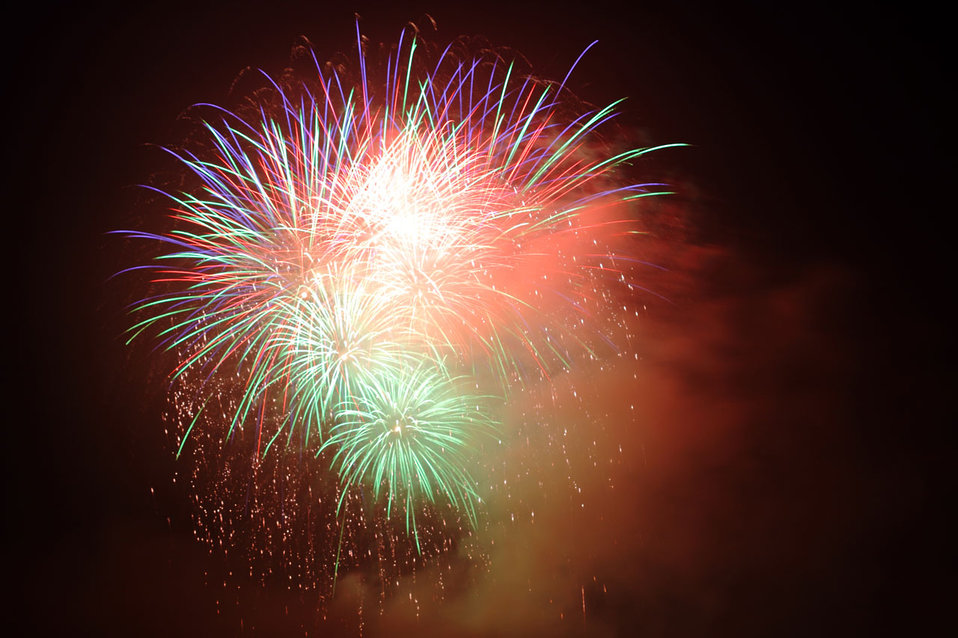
Fireworks blast

Fireworks explosion.